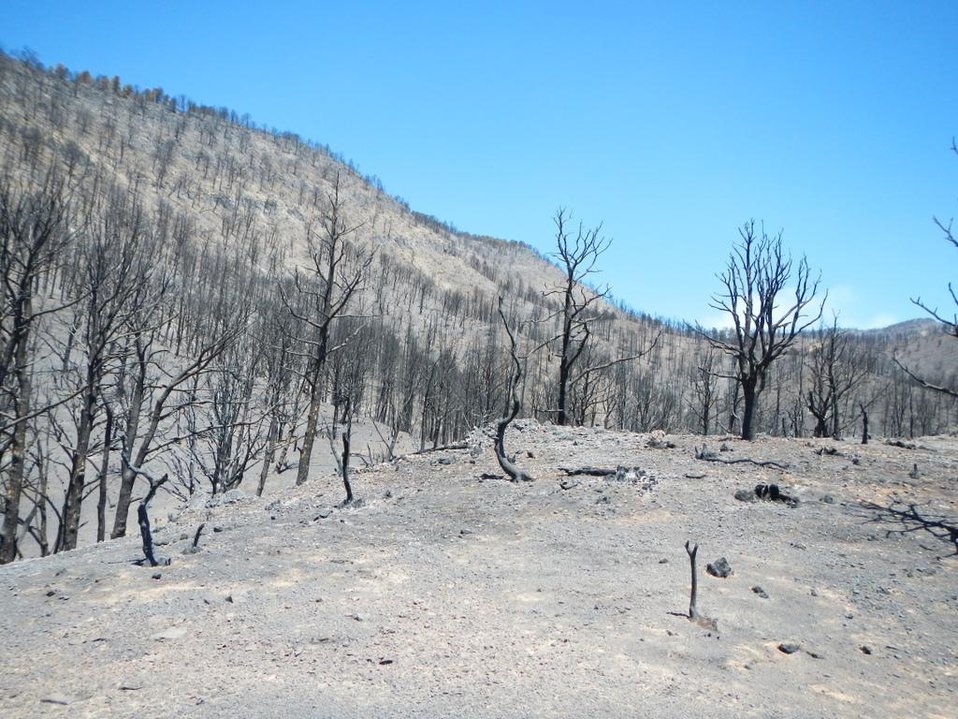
This area of high severity burn is located on the east side of the Silver Fire near Kingston, NM. The Silver Post Fire response has the Burned Area Emergency Response (BAER) team beginning operations to seed acres of high burn severity and to mulch additional acres. Seeding reduces effects to downstream life, property, and infrastructure by reducing erosion and runoff. Areas of high burn severity are to be seeded with a quick germinating, non-persistent annual cereal barley that would provide rapid ground cover. A small percentage of native perennial species would also be included to give the burned area a jump start in natural recovery, and provide for long-term ground cover. Mulch is the most effective treatment for controlling erosion and runoff, as it provides immediate ground cover. Mulch also assists in stabilizing soil in and around these areas.